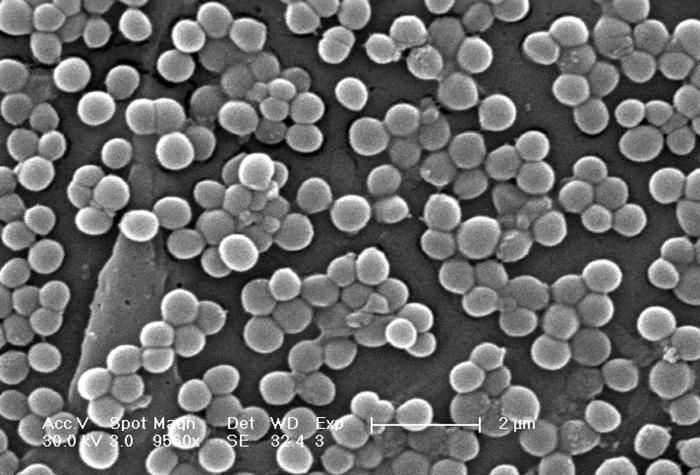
This 2005 scanning electron micrograph (SEM) depicted numerous clumps of methicillin-resistant Staphylococcus aureus bacteria, commonly referred to by the acronym, MRSA; Magnified 9560x.Recently recognized outbreaks, or clusters of MRSA in community settings have been associated with strains that have some unique microbiologic and genetic properties, compared with the traditional hospital-based MRSA strains, which suggests some biologic properties, e.g., virulence factors like toxins, may allow the community strains to spread more easily, or cause more skin disease. A common strain named USA300-0114 has caused many such outbreaks in the United States. See PHIL 10046 for a colorized version of this micrograph.